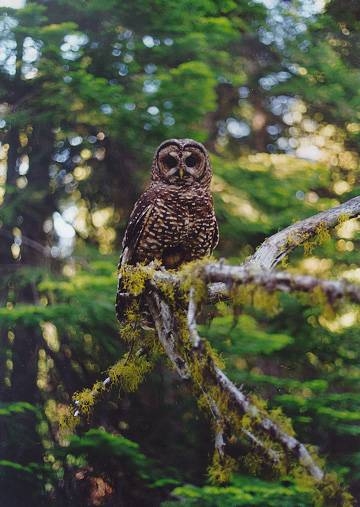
Spotted Owl